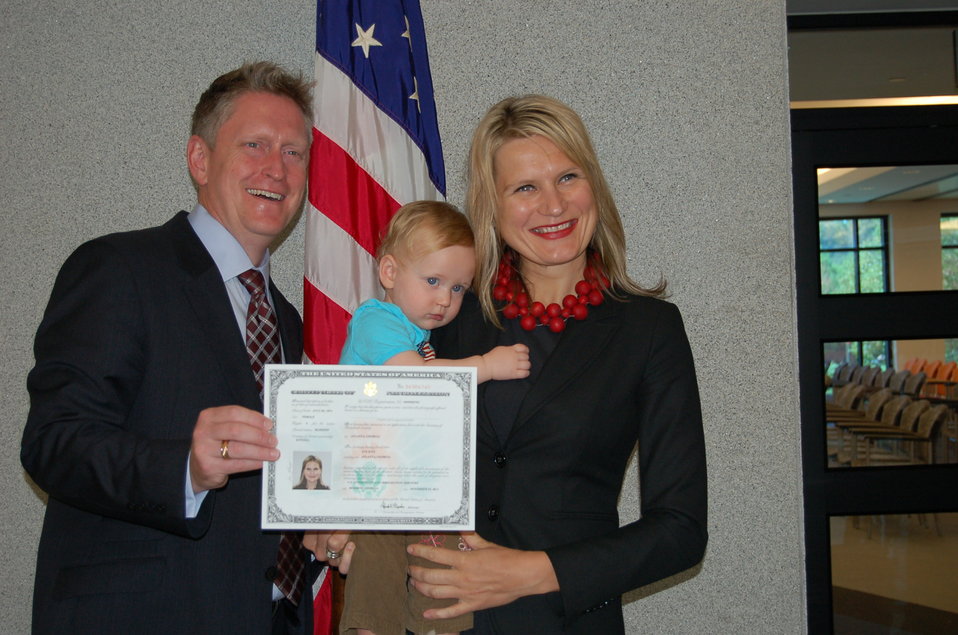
New Citizens